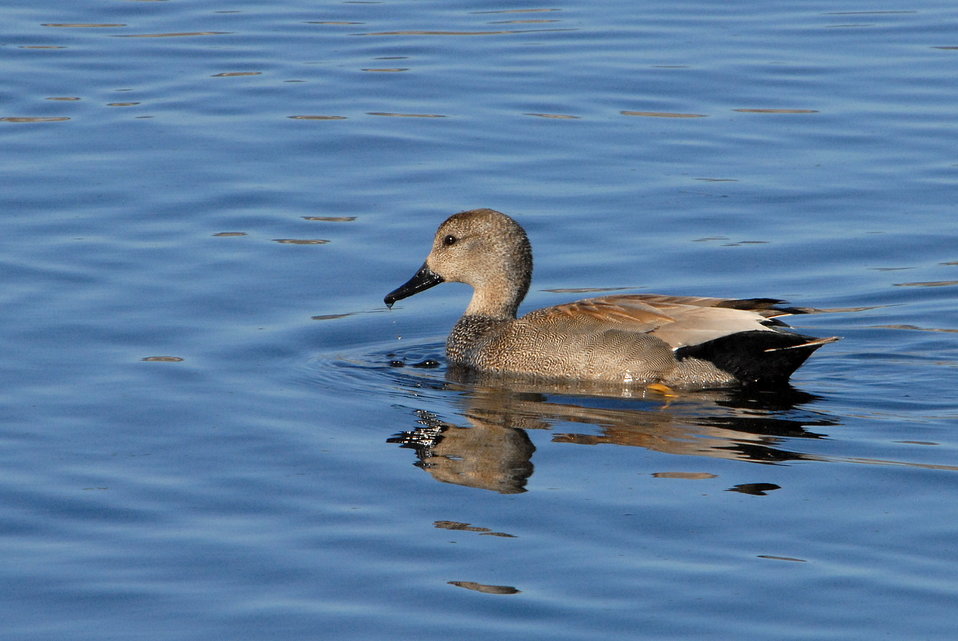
Gadwall (male)